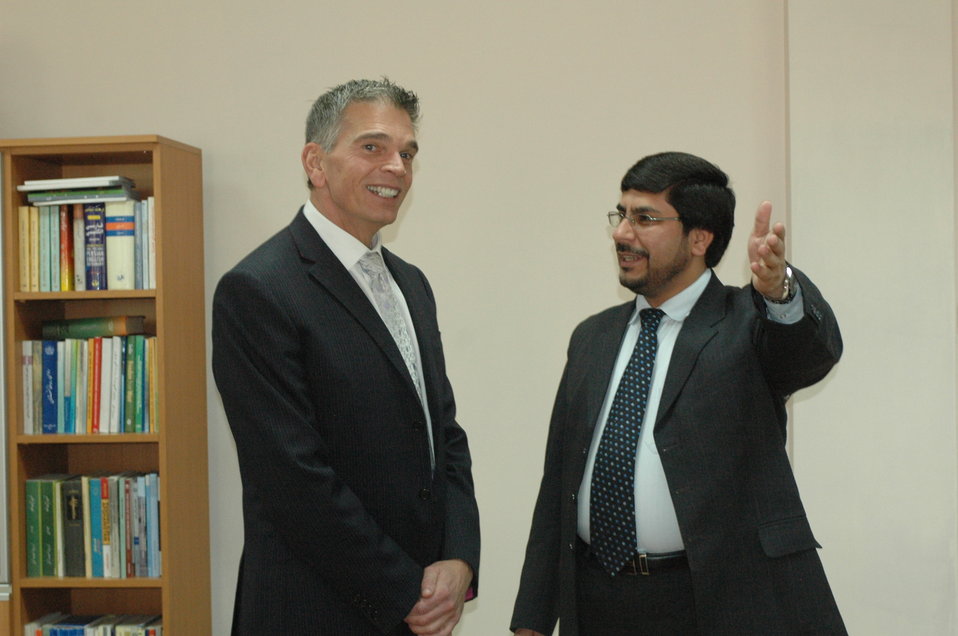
Community Based Stabilization Grants Ceremony, December 7, 2010